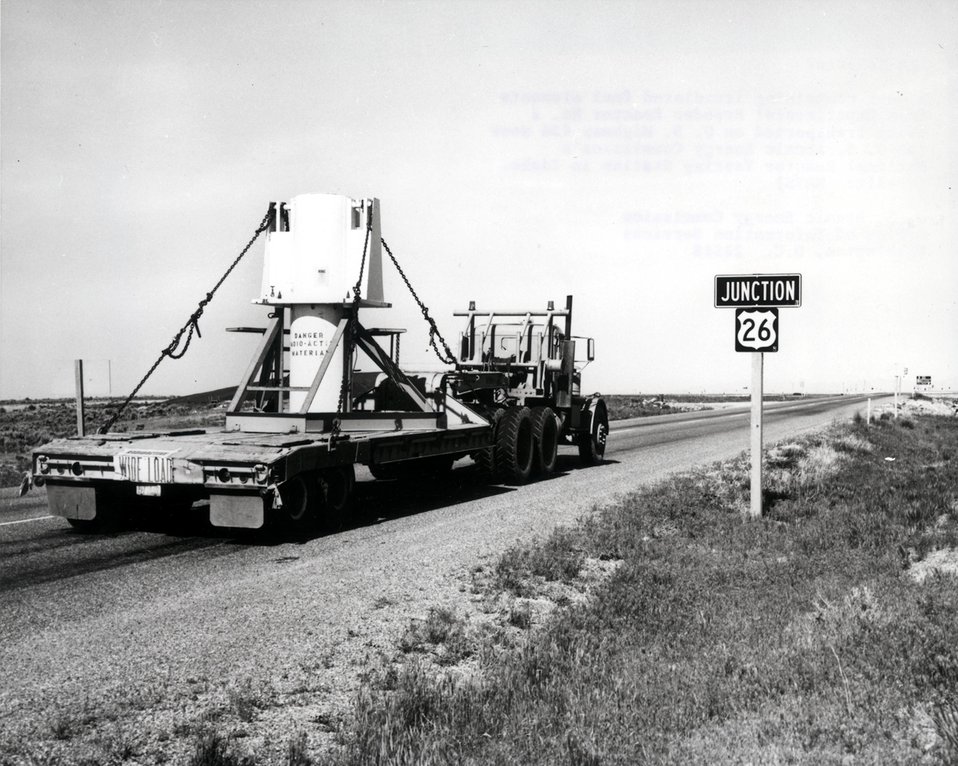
A cask containing irradiated fuel elements from Experimental Breeder Reactor No. 2 being transported on U.S. Highway #26 near the Energy Research and Development Administration National Reactor Testing Station in Idaho. Circa 1974.